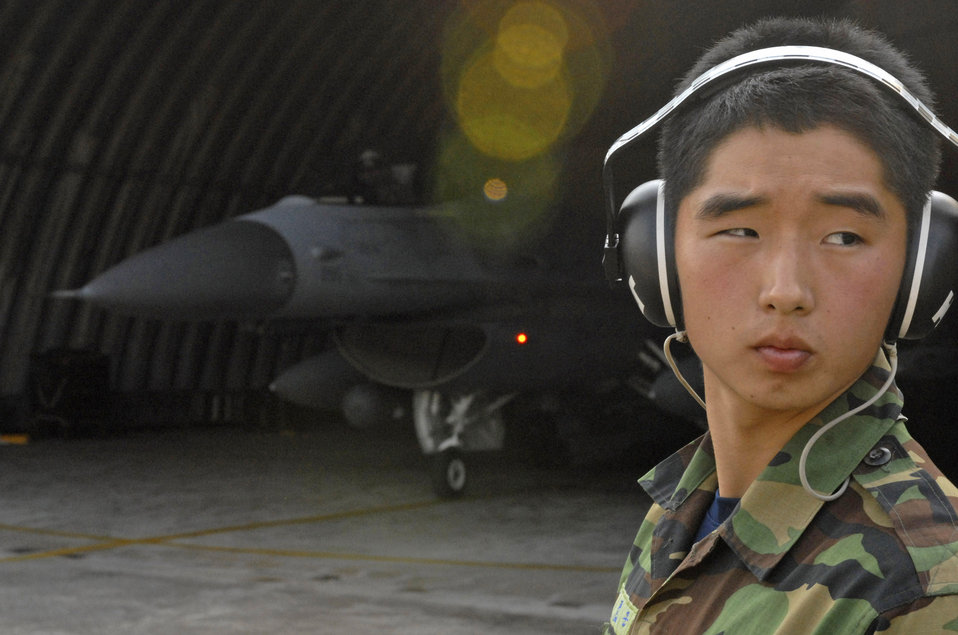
Buddy Wing Program teams up U.S., Korean Airmen

South Korea air force Staff Sgt. Hyunjun Choi checks the ramp as he waits to assist with the launch of an F-16 Fighting Falcon Oct. 24 during a Buddy Wing program exercise at Jungwon Air Base, South Korea. The Buddy Wing program is a way for U.S. Air Force and South Korea air force members to develop teamwork, exchange ideas and improve war time tactics. The F-16 is from the 8th Fighter Wing, Kunsan AB, South Korea. Sergeant Choi is a maintainer from the 161st Maintenance Squadron.